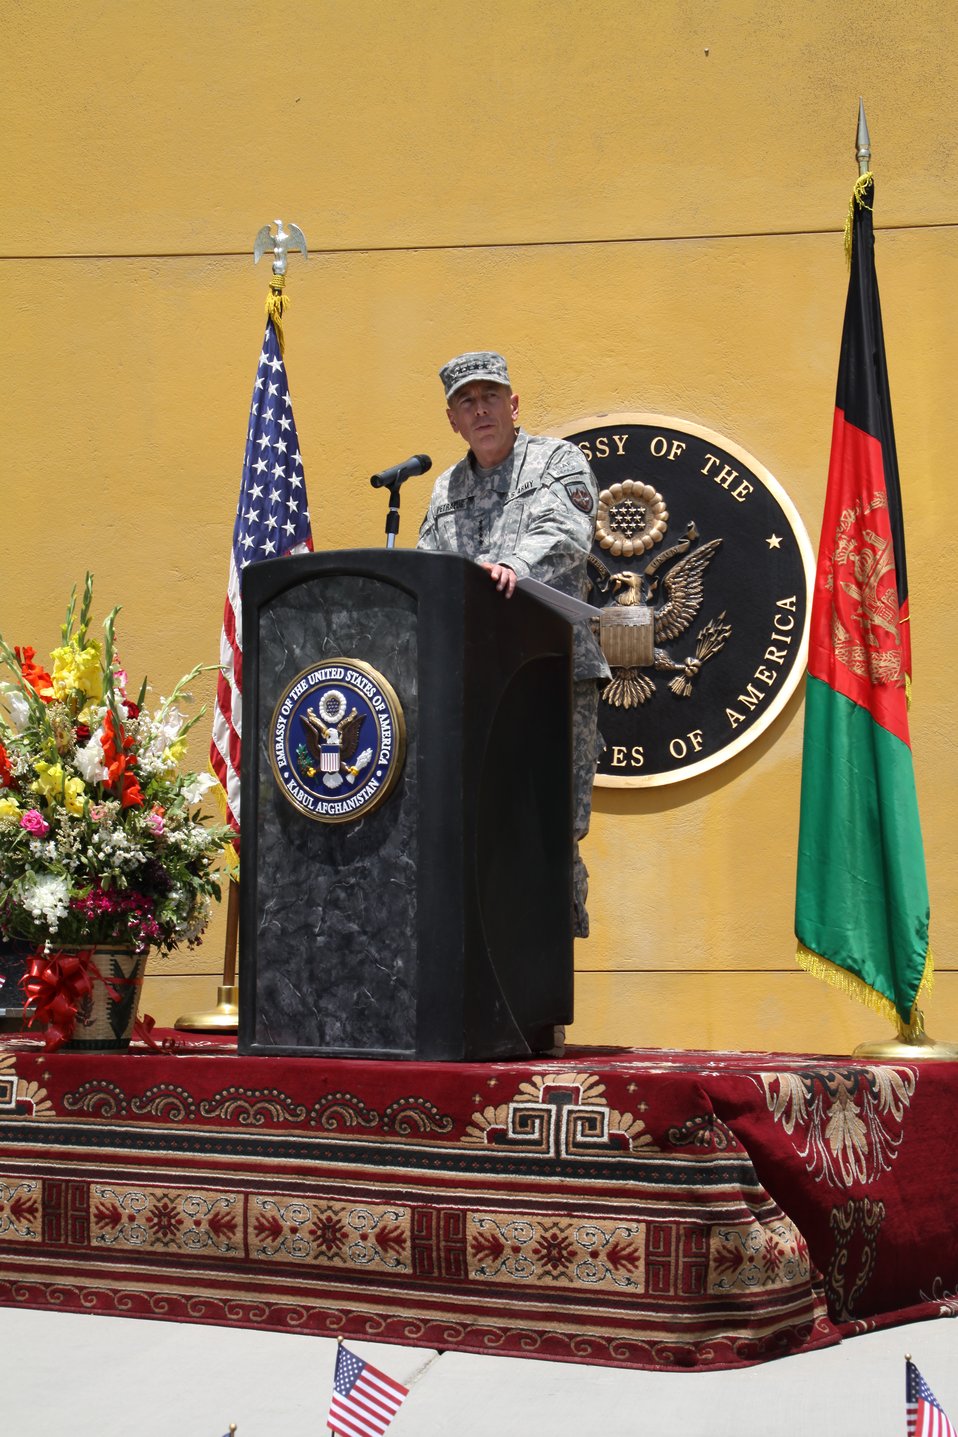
Kabul Official July 4th Celebration